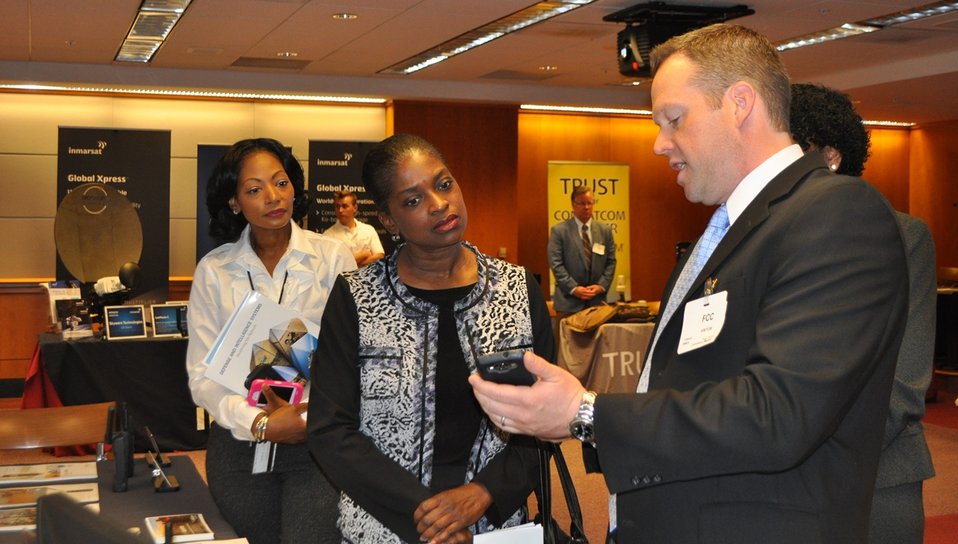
5.14.2014 Satellite Technology Demonstration

Commissioner Mignon Clyburn at the Satellite Technology Demonstration